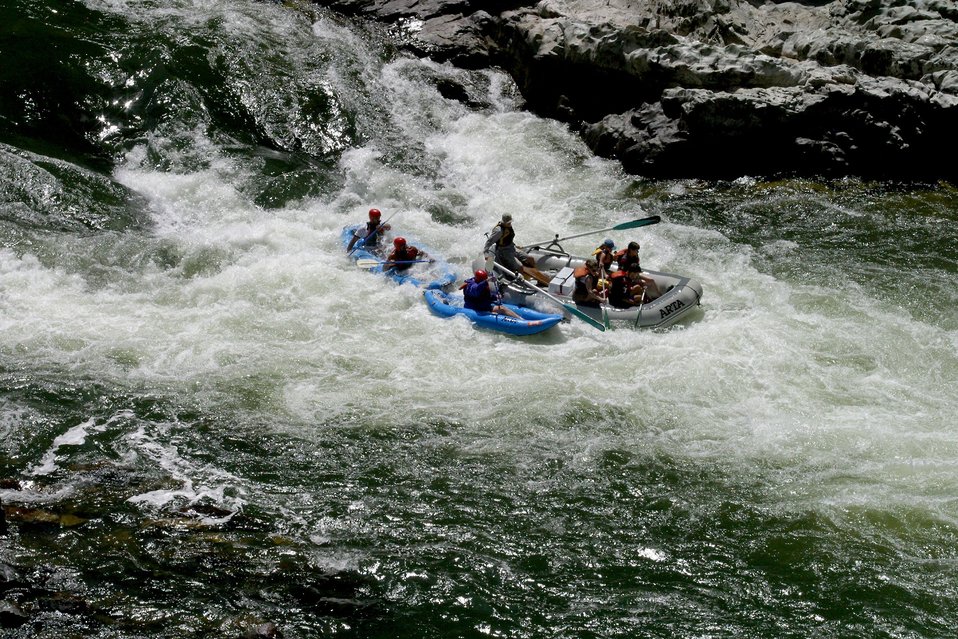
Boater at Grave Creek Falls